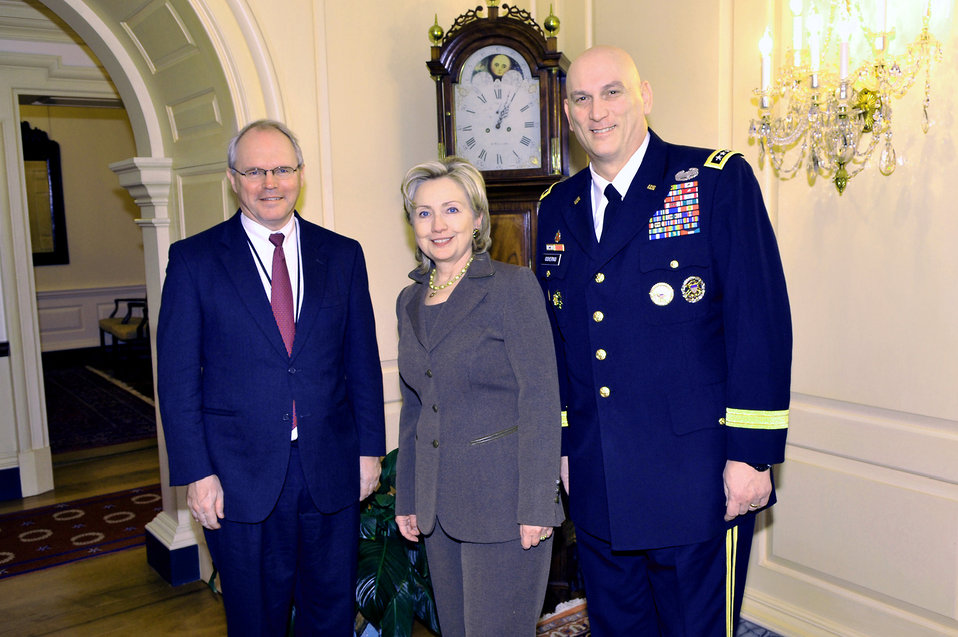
Secretary Clinton Meets With U.S. Ambassador to Iraq and Commanding General, Multi-National Force-Iraq

U.S. Secretary of State Hillary Rodham Clinton meets with U.S. Ambassador to Iraq Chris Hill and General Ray Odierno, Commanding General, Multi-National Force-Iraq, at the Department of State in Washington, DC February 19, 2010.